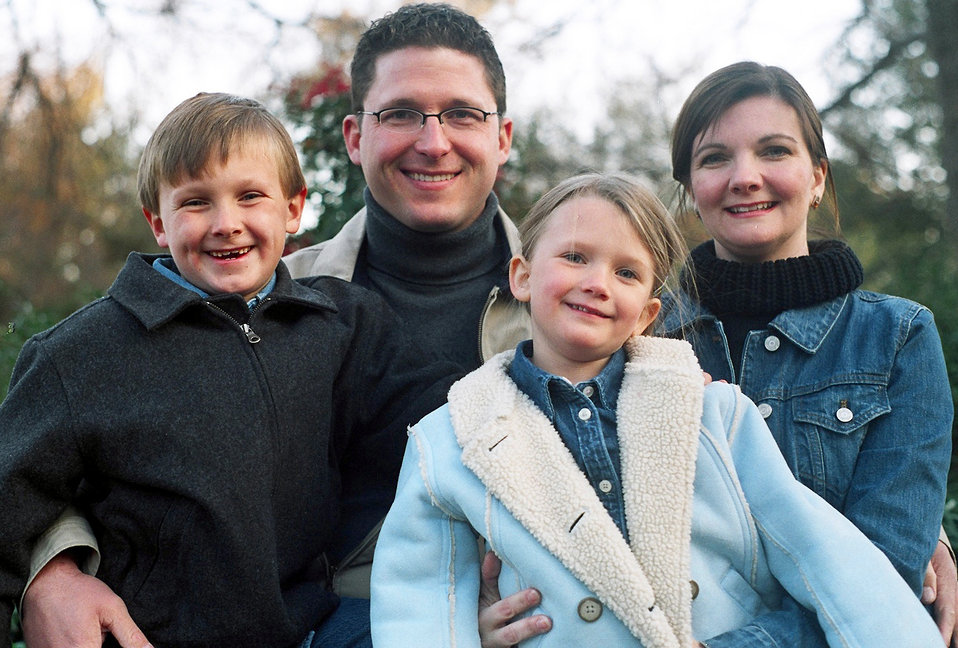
Blood donations save life

WITCHITA FALLS, Texas -- Retired Tech. Sgt. Derrick Duncan, with his wife, Samantha, and their children, William and Emily, credits blood donations with saving his life after a vehicle accident severely injured him last April.